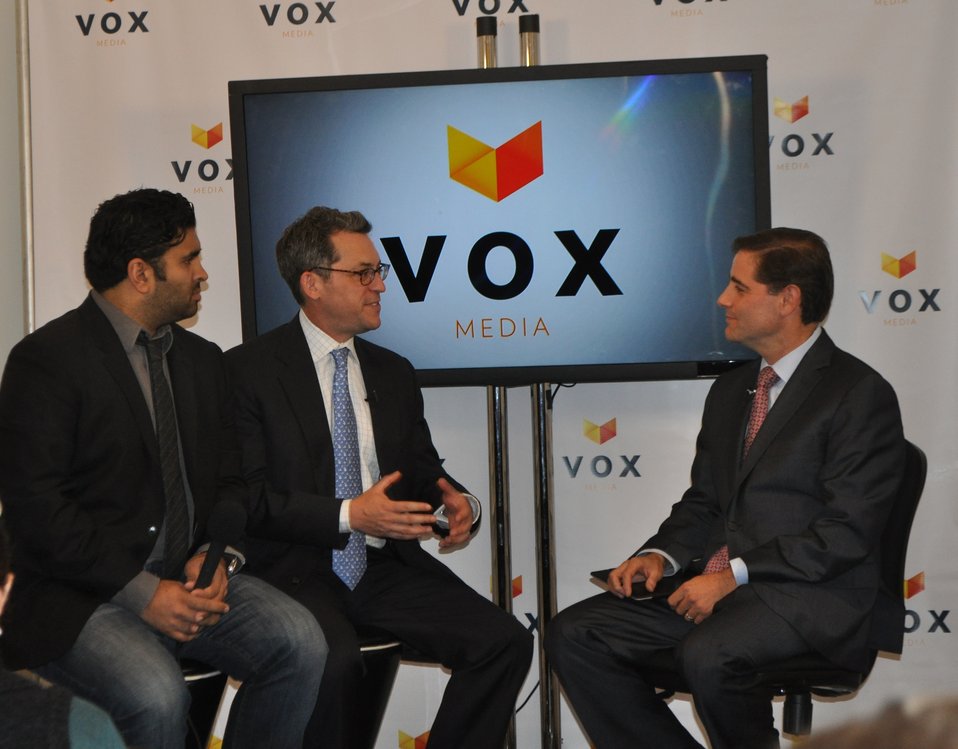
Broadband Challenges and Opportunities, at Vox Media